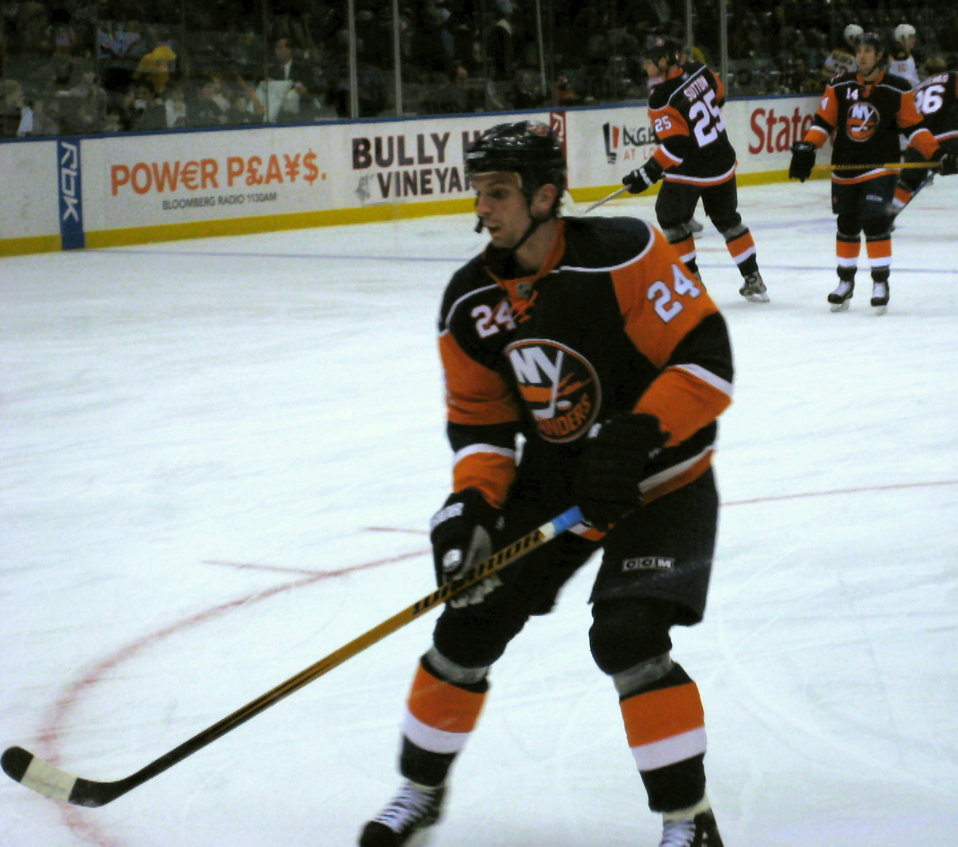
Radek Martinek during pre-game warmups before the Islanders vs. Bruins game 11/24/07 at Nassau Coliseum.